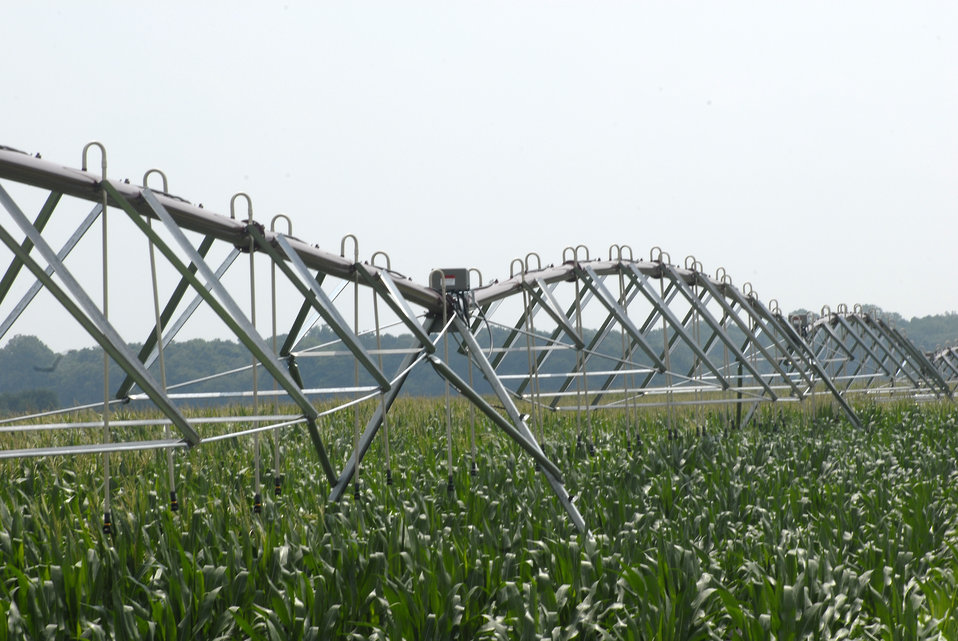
A U.S. Department of Agriculture (USDA) Natural Resources Conservation Service (NRCS) employee examines the control box of a center pivot irrigation system on a Delaware farm on July 8, 2008. As part of the Conservation Effects Assessment Project (CEAP) study of the Chesapeake Bay region by the USDA NRCS some farmers use a center pivot irrigation system. Center pivot irrigation is a method of crop irrigation in which equipment rotates around a pivot. This center pivot irrigation system is using Low Elevation Spray Application (LESA) system, which uses less water and reduces evaporation.